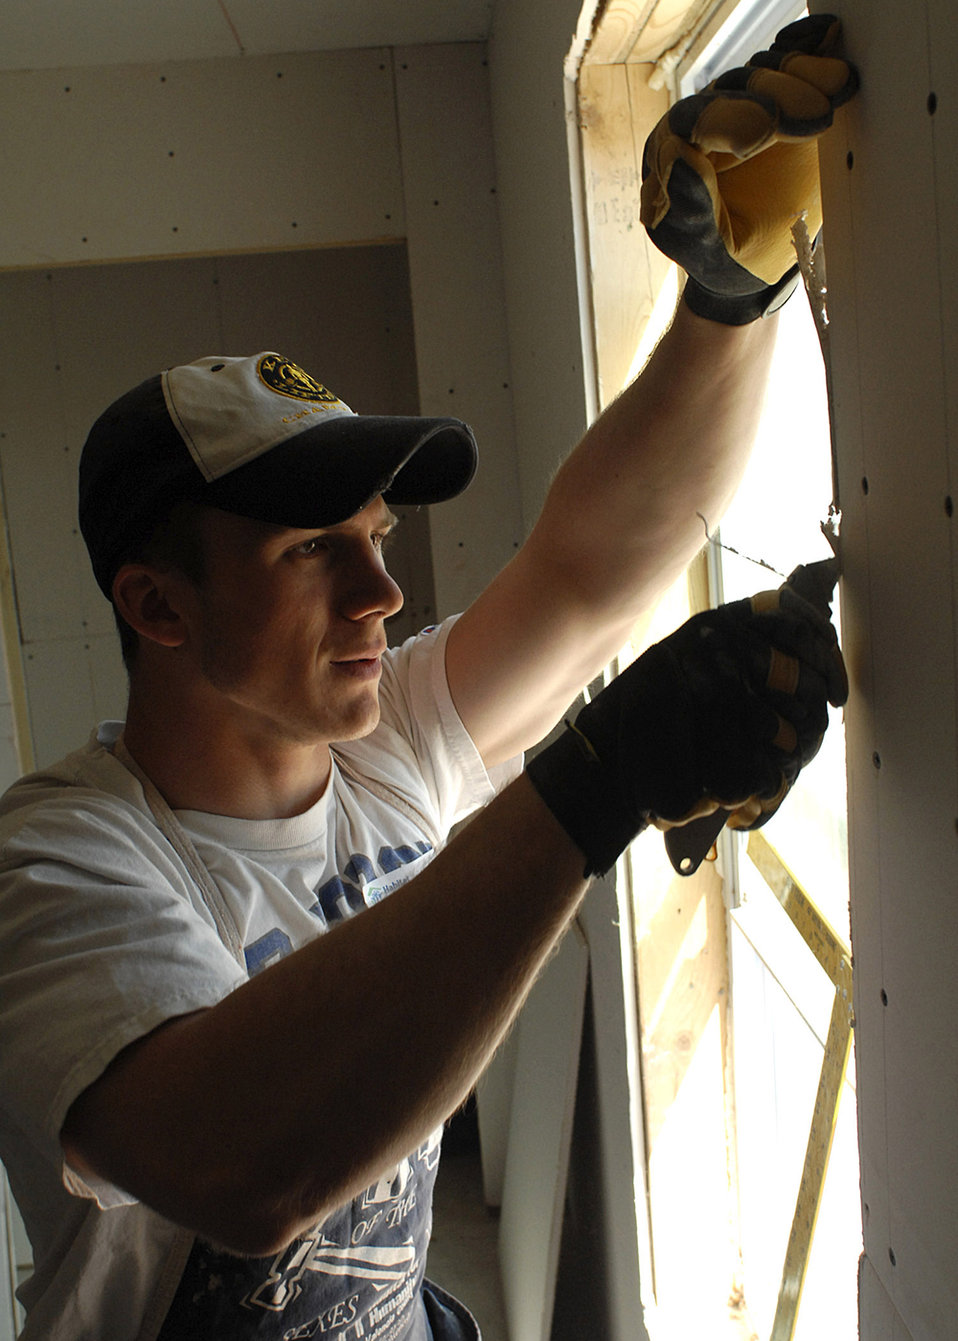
Spring Break Volunteer

U.S. Air Force Academy Cadet Jordan Ostwald cuts away sheetrock at a Habitat for Humanity home in Tome, N.M. Cadet Ostwald is joining a group of approximately 10 other cadets who are using their spring break to volunteer rather than traveling and relaxing.